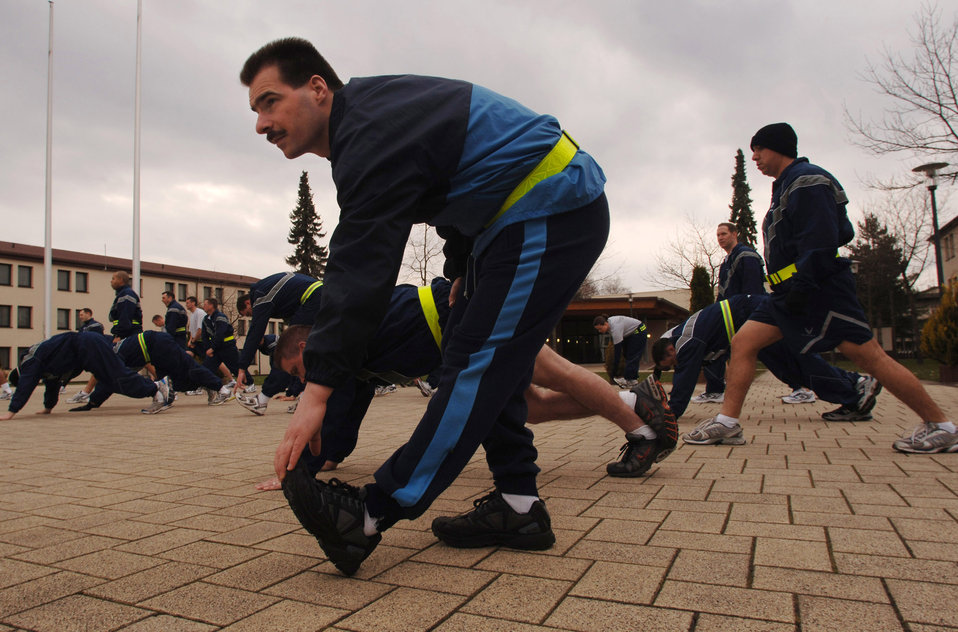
German sergeant enrolls in USAFE NCO Academy

German air force Master Sgt. Holger Fels joins fellow Kisling Noncommissioned Officer Academy students during a daily physical training session April 26 at Kapaun Air Station, Germany. Sergeant Fels, a German NCO Aaademy instructor in Appen, Germany, voluntarily enrolled in the six-week academy course designed for U.S. Air Force technical sergeants to prepare for a four-year special duty assignment as an exchange instructor at the Senior NCO Academy at Maxwell Air Force Base, Ala.